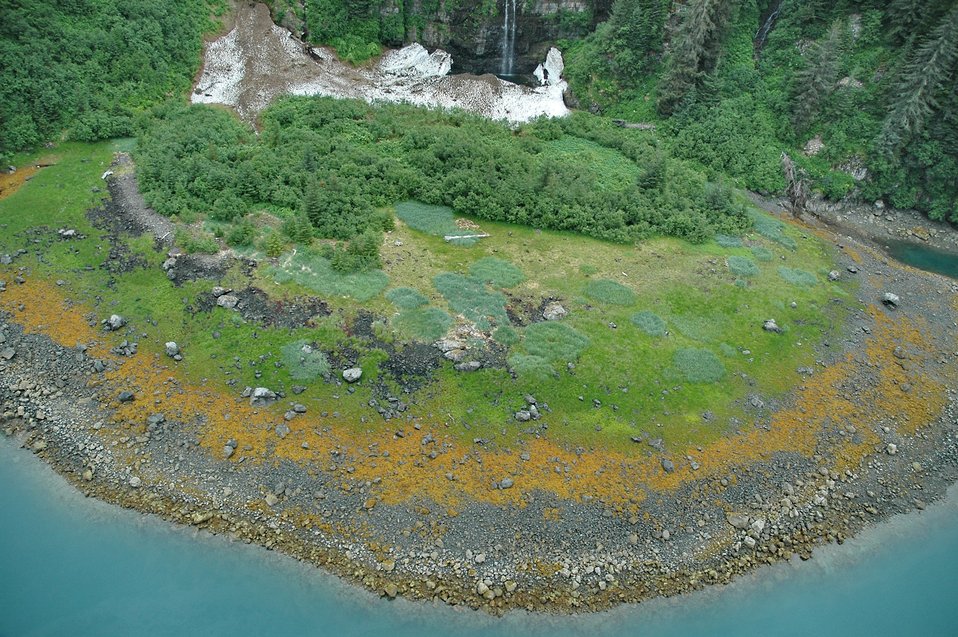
Aerial photograph. A boulder strewn beach showing various floral zones, left over snow and ice from the winter past, and a small waterfall in the Bainbridge Passage area.